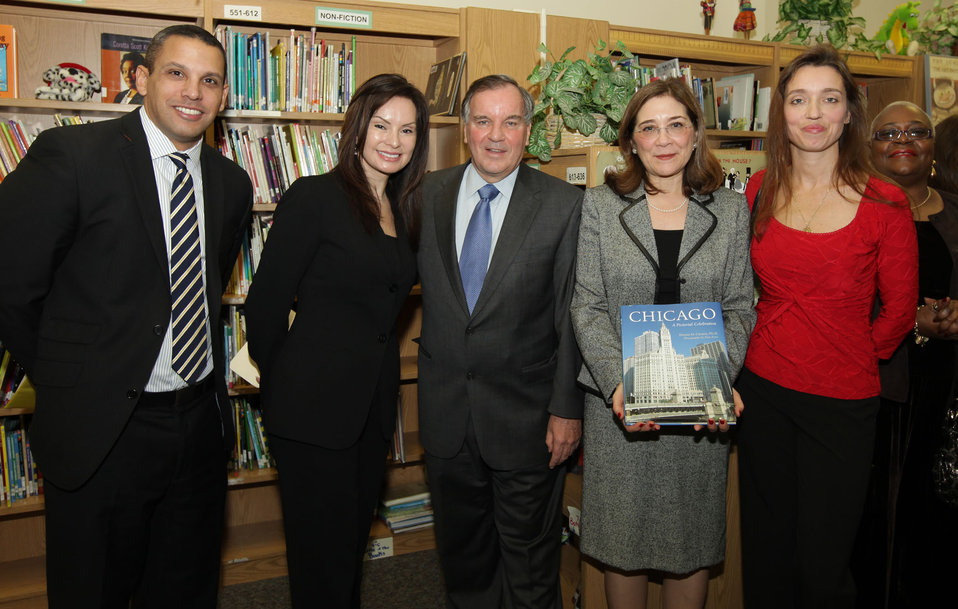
Rios in Chicago: 1/6/10

(left to right) CEO of the Chicago Public Schools Huberman, Treasurer Rios, Chicago Mayor Daley, Principal Deborah F. Reese and a parent at Rufus M. Hitch Elementary School on January 6, 2010, a public school in Chicago which benefited from the Build America Bonds program.